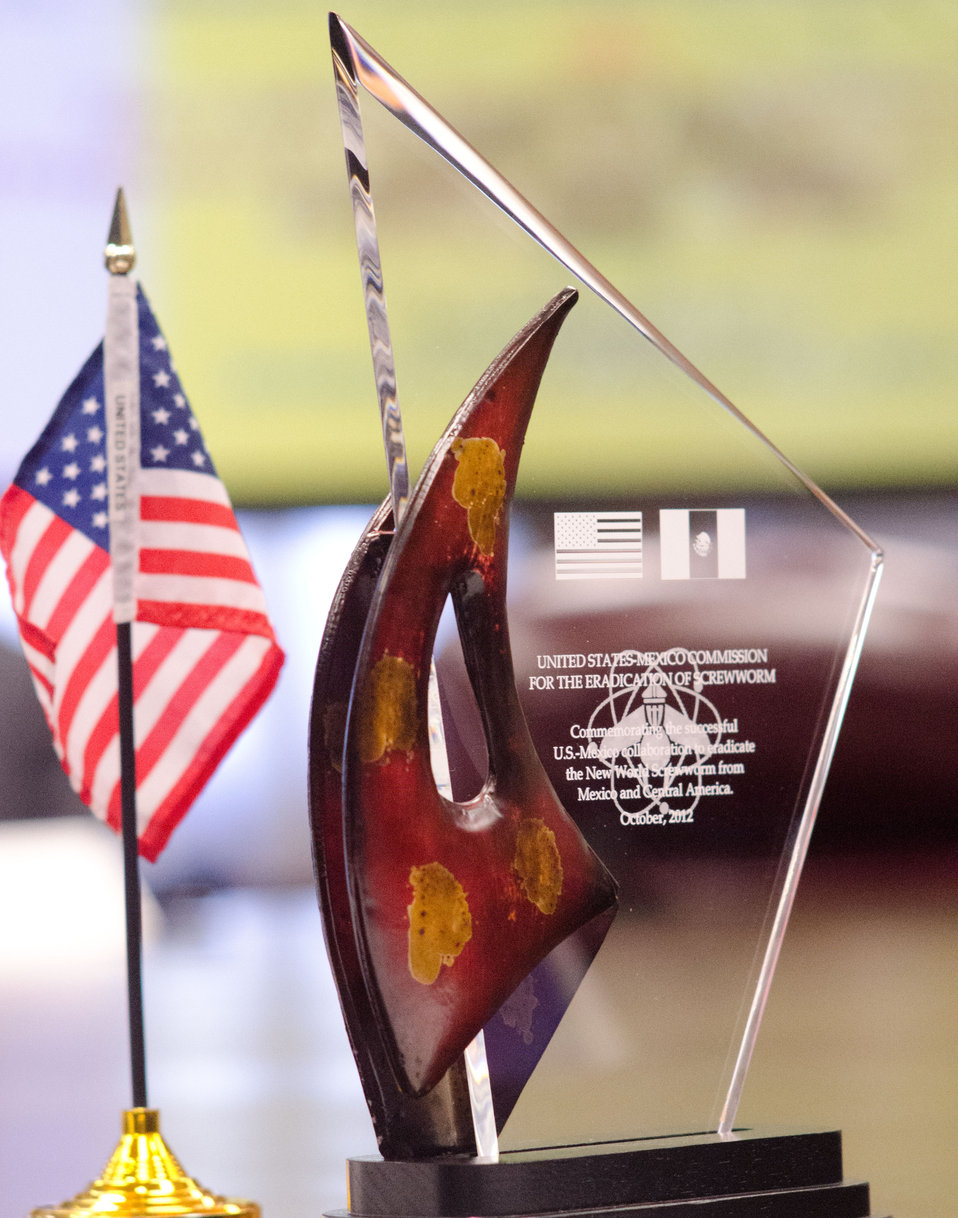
The U.S. Department of Agriculture (USDA) Animal and Plant Health Inspection Service (APHIS) International Service Action Program COMEXA Comminssion meeting at USDA in Washington, D.C. on Oct. 5, 2012.